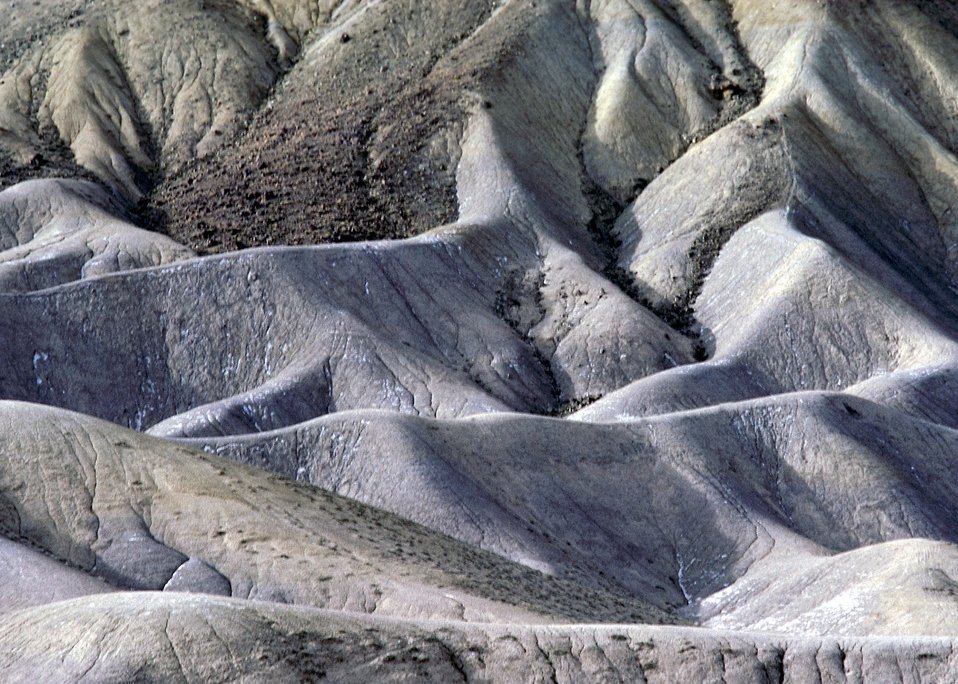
Devils Thumb